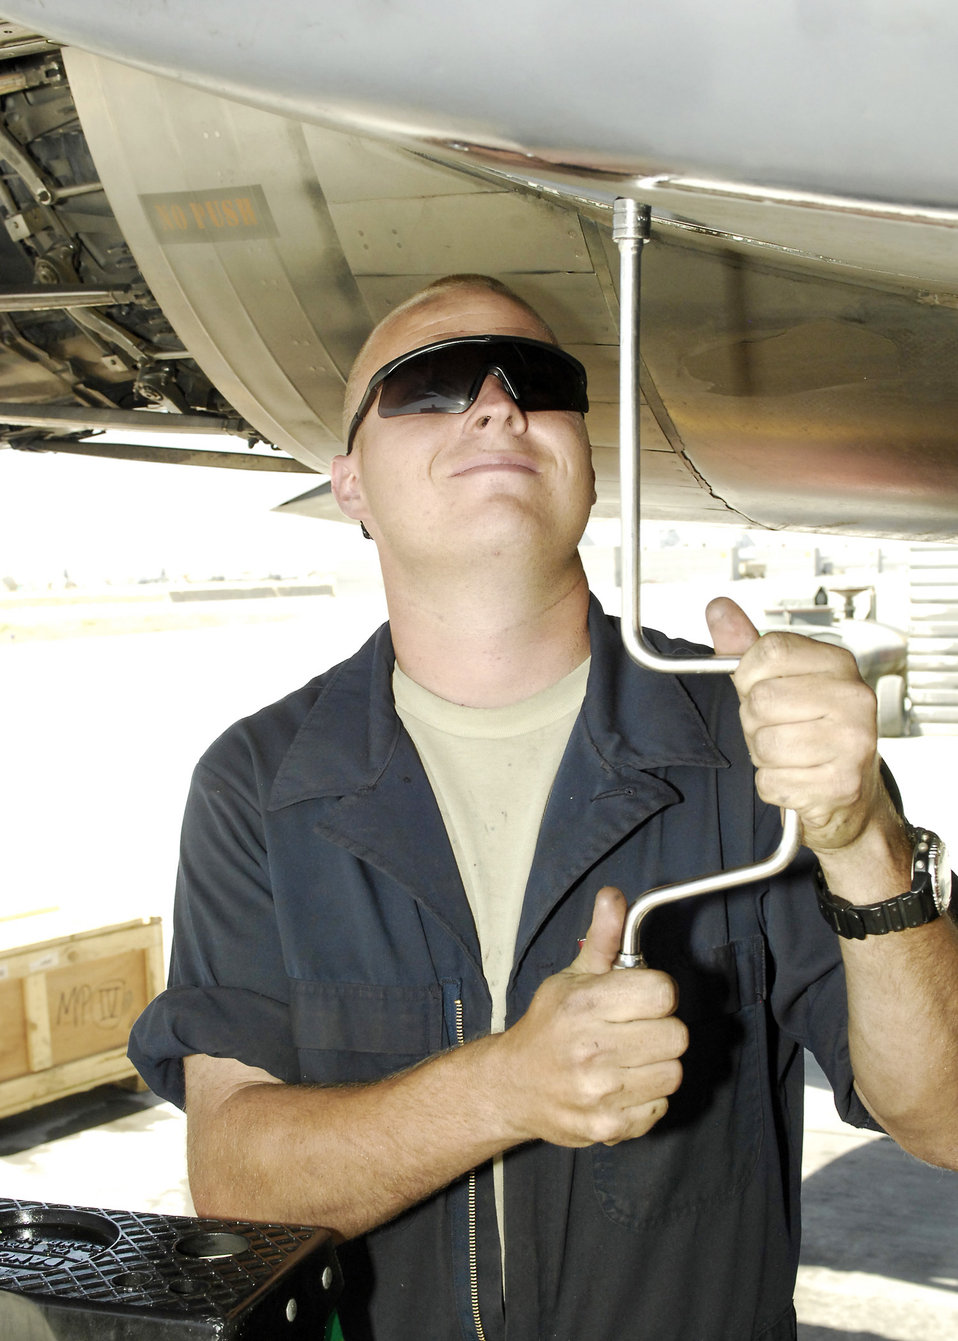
Keeping the Strike Eagles flying

Senior Airman Adam Greene, a crew chief from the 336th Aircraft Maintenance Squadron at Bagram Airfield, Afghanistan, replaces a panel during an inspection of an F-15E Strike Eagle. Airman Greene is deployed from Seymour Johnson Air Force Base, N.C. Strike Eagles launch around the clock in support of coalition forces.